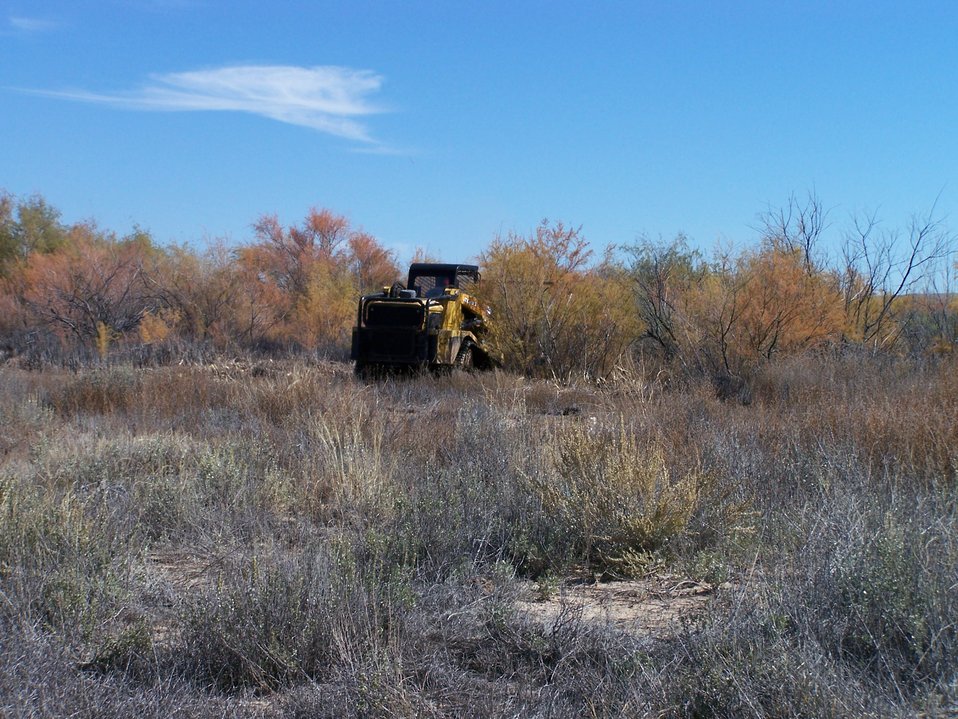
Riparaian Restoration

A contractor removes invasive tamarisk from a riparian area along the Republican River in Colo.

The project was funded by the U.S. Fish and Wildlife Service’s Partners for Fish and Wildlife program, whose habitat restoration projects are extraordinary engines for the U.S. economy. Restoration Returns: The Contribution of Partners for Fish and Wildlife Program and Coastal Program Projects to Local U.S. Economies finds that, in working directly with partners to implement vital on-the-ground habitat restoration, Service programs created more than 3,900 jobs in Fiscal Year 2011, generating a total economic stimulus of $327.6 million.

The “restoration economy” is a subset of green jobs that includes such industries as heavy equipment providers and operators, plant nurseries, landscape architects, and construction companies, among other firms.

Download the entire report at: www.fws.gov/home/restoration returns.html.